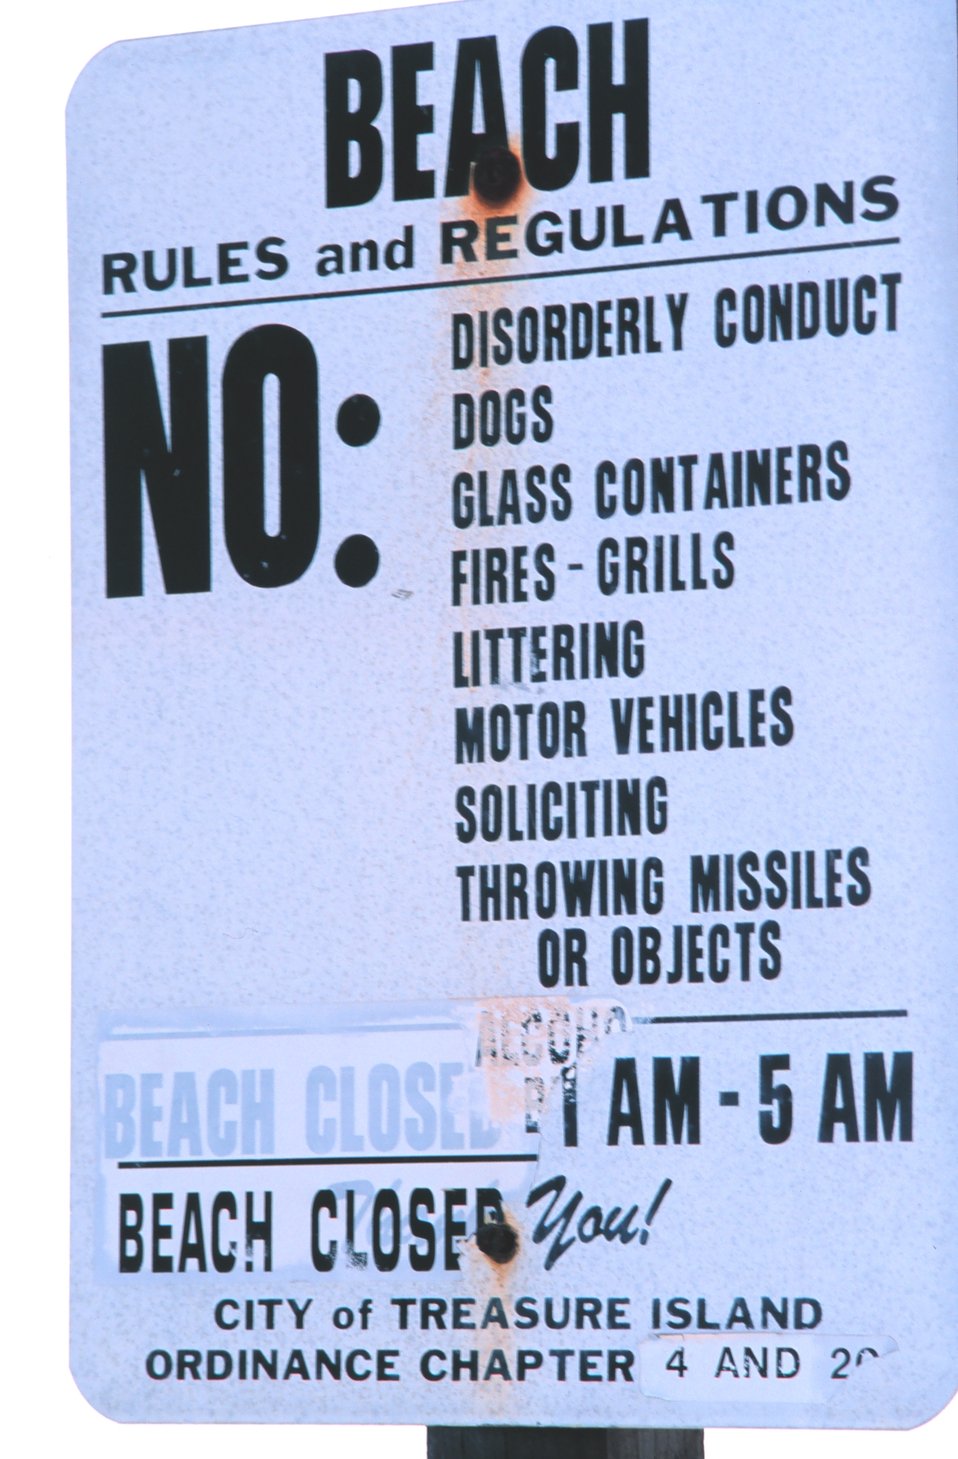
A reminder that even paradise has rules